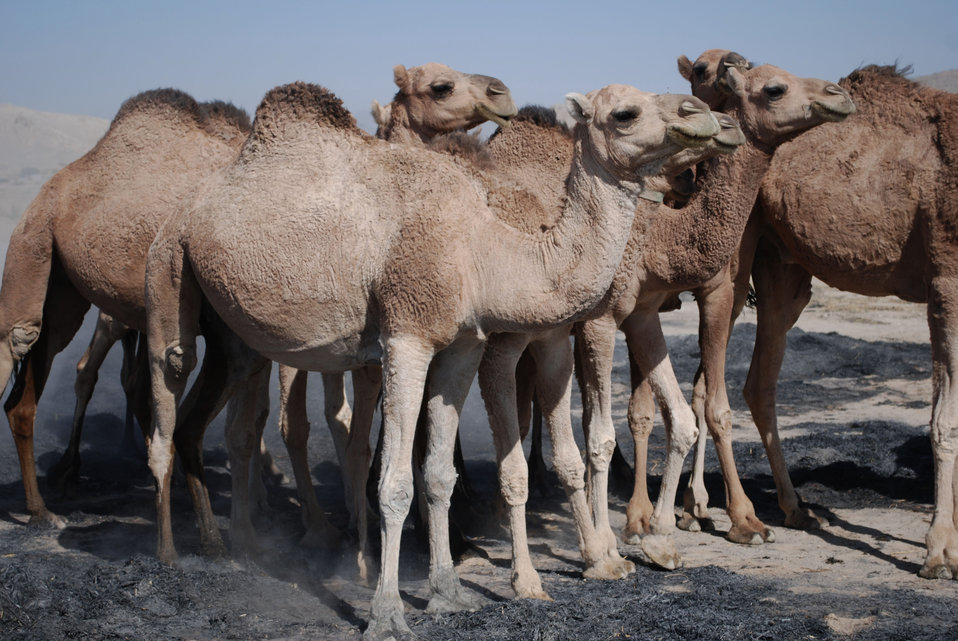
'On the Road' in Kandahar